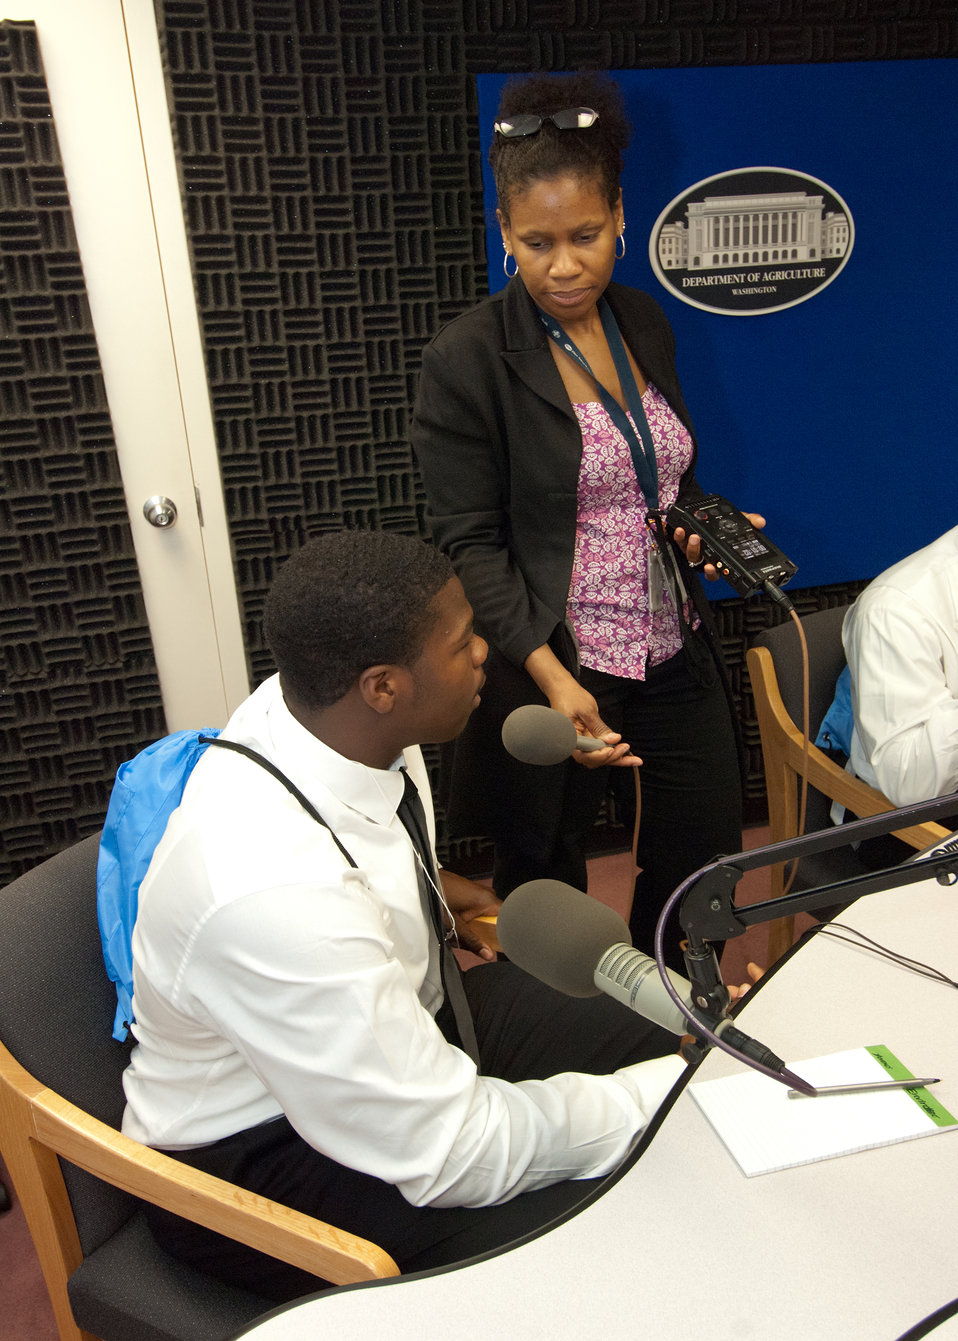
While on a Career Opportunity, seniors from Calvert High School Calvert, Texas tour the television studio United States Department of Agriculture (USDA) as part of a senior trip sponsored by the Farm Service Agency “Ag in the Classroom” program Monday, May 23, 2011, in Washington, DC. USDA Creative Media and Broadcast Center radio broadcaster Susan Carter interviews a senior from Calvert High School Calvert, Texas Jamarion Ramirez.